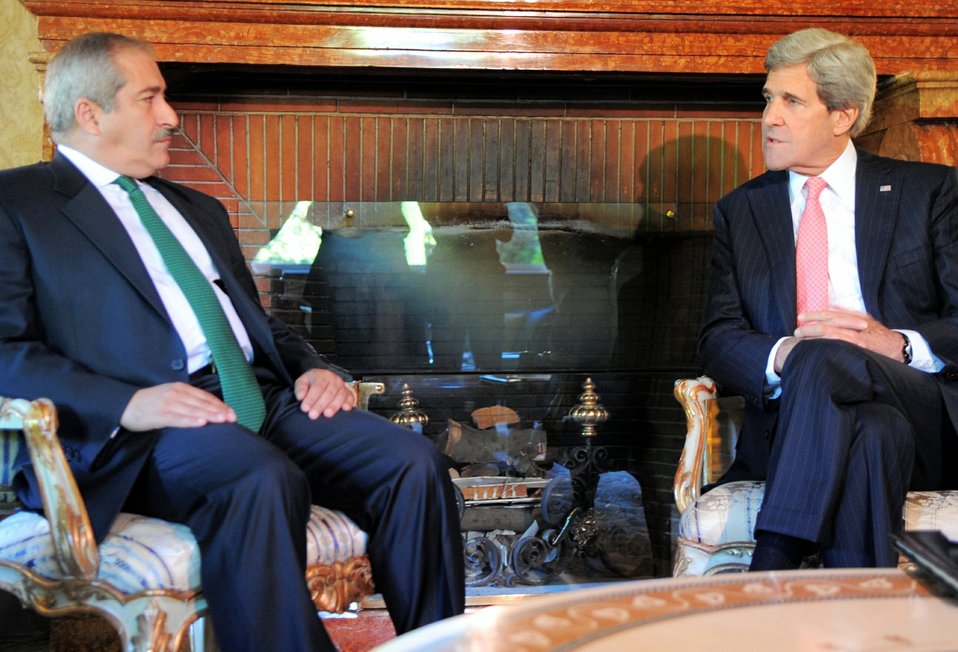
Secretary Kerry Speaks With Jordanian Foreign Minister Judeh

U.S. Secretary of State John Kerry speaks with Jordanian Foreign Minister Nasser Judeh in Rome, Italy, on May 9, 2013.